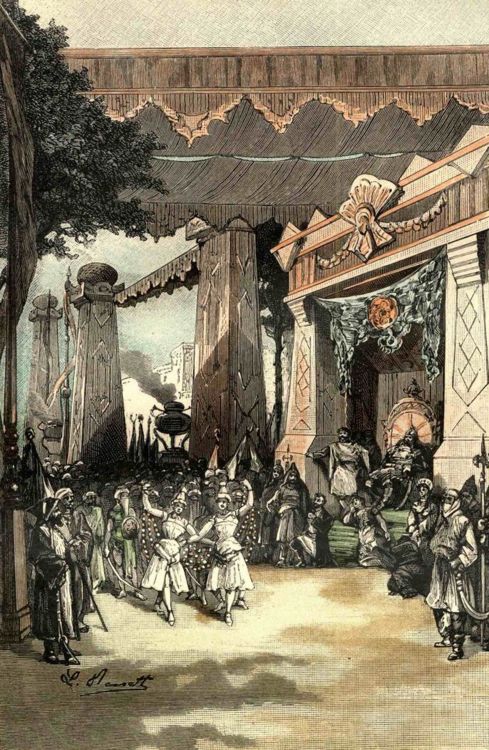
An illustration from the novel 'Michael Strogoff: The Courier of the Czar' by Jules Verne drawn by Jules Férat. Polski: Ilustracja powieści Juliusza Verne'a 'Michał Strogow, kurier carski' autorstwa Julesa Férata. Français : 'Michel Strogoff. Le courier du tzar', Jules Férat. Français : Aussitôt les danses commencèrent.